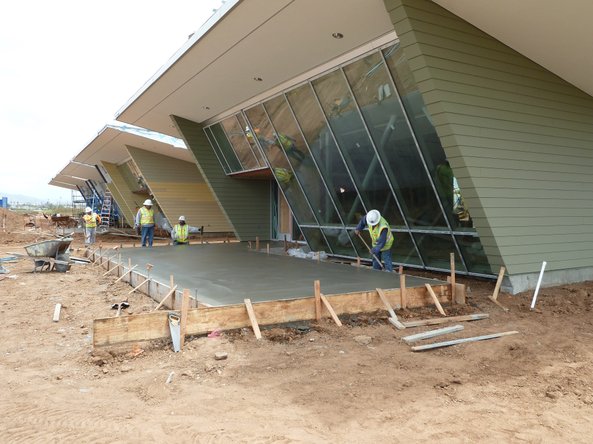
Front of New San Diego Complex Headquarters

PCL Construction assembles the front walls of the new headquarters for the San Diego NWR Complex.